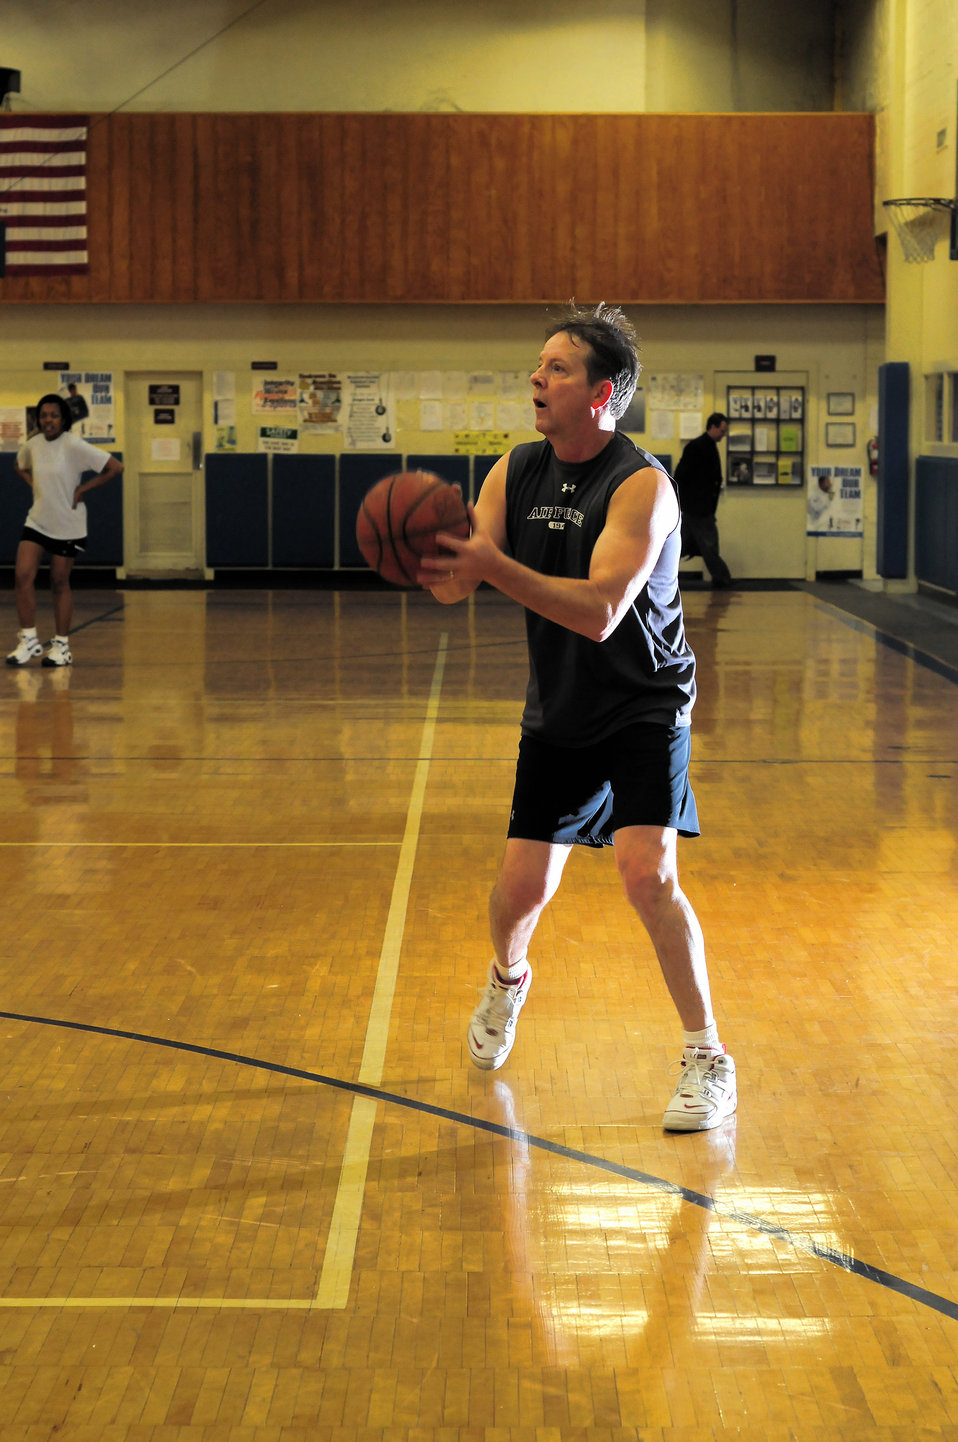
Chief McKinley 'schools' Senior NCO Academy instructors

Chief Master Sgt. of the Air Force Rodney J. McKinley prepares to make a shot during a basketball game Feb. 25 at Maxwell Air Force Base's Gunter Annex in Alabama. Chief McKinley and other chief master sergeants played against instructors at the Senior NCO Academy in the early-morning game.